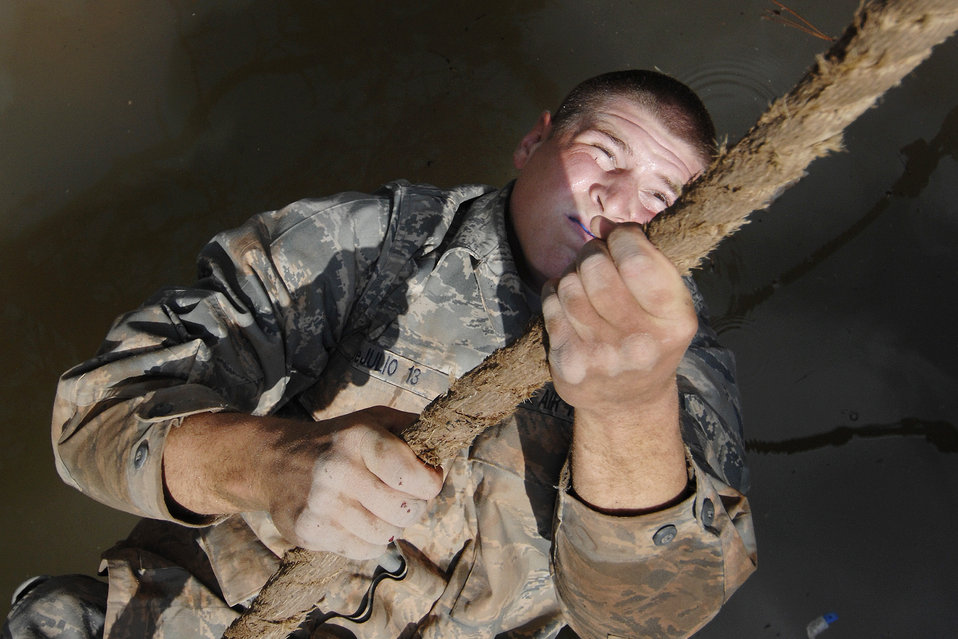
Academy basic field training at Jacks Valley

Air Force Academy Basic Cadet Nicholas DeJulio navigates across a water obstacle July 21 in the Jacks Valley Assault Course near Colorado Springs, Colo.